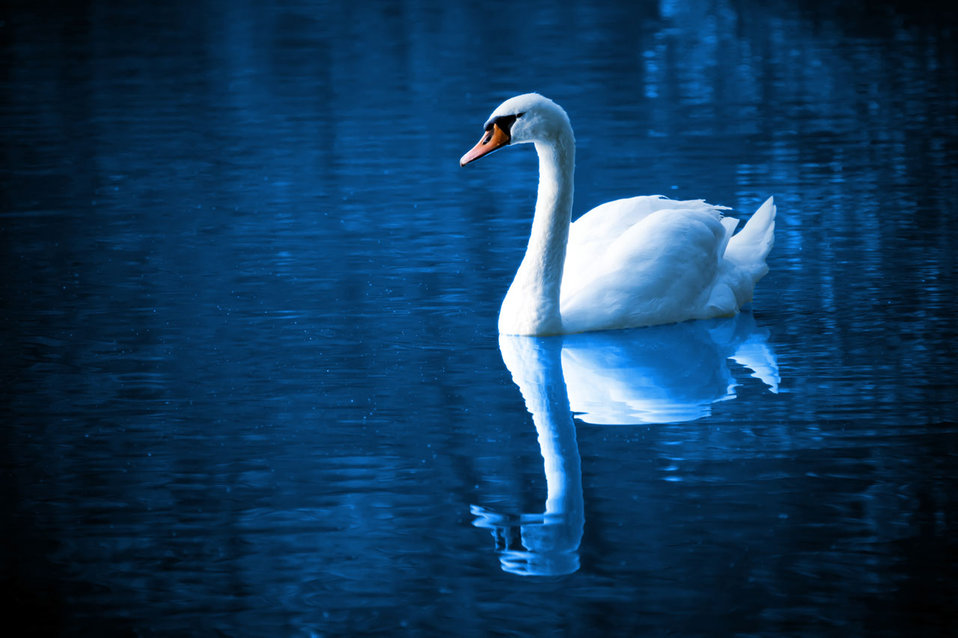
Swan on lake

Blue photo of swan on lake.